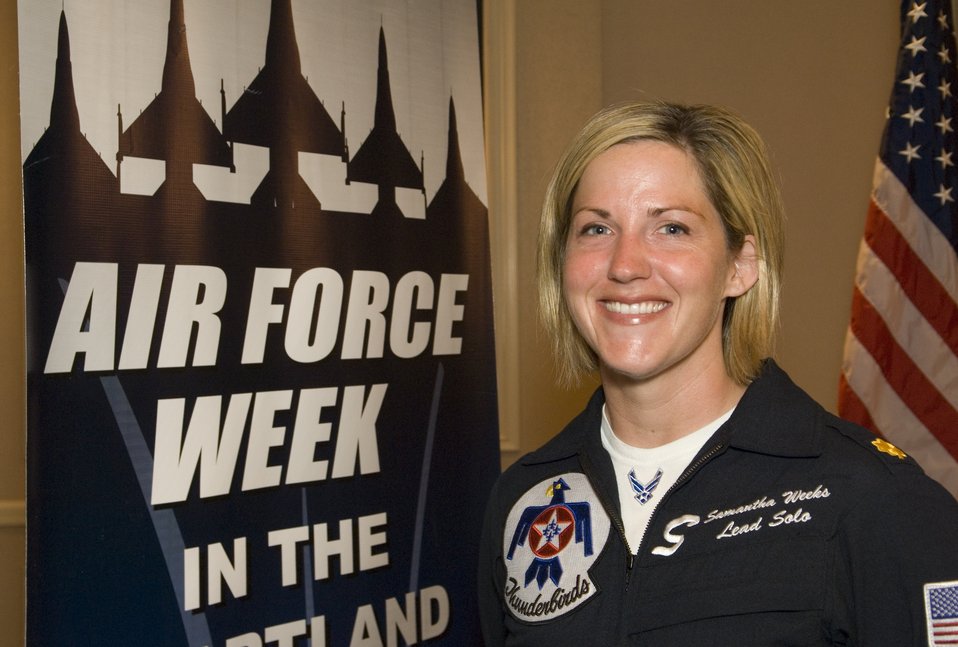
Female leaders from Omaha, Air Force gather at Offutt

Maj. Samantha Weeks poses at the Ten Dinner Aug. 14 in the Patriot's Club at Offutt Air Force Base, Neb. Major Weeks is with the Air Force Demonstration Squadron,